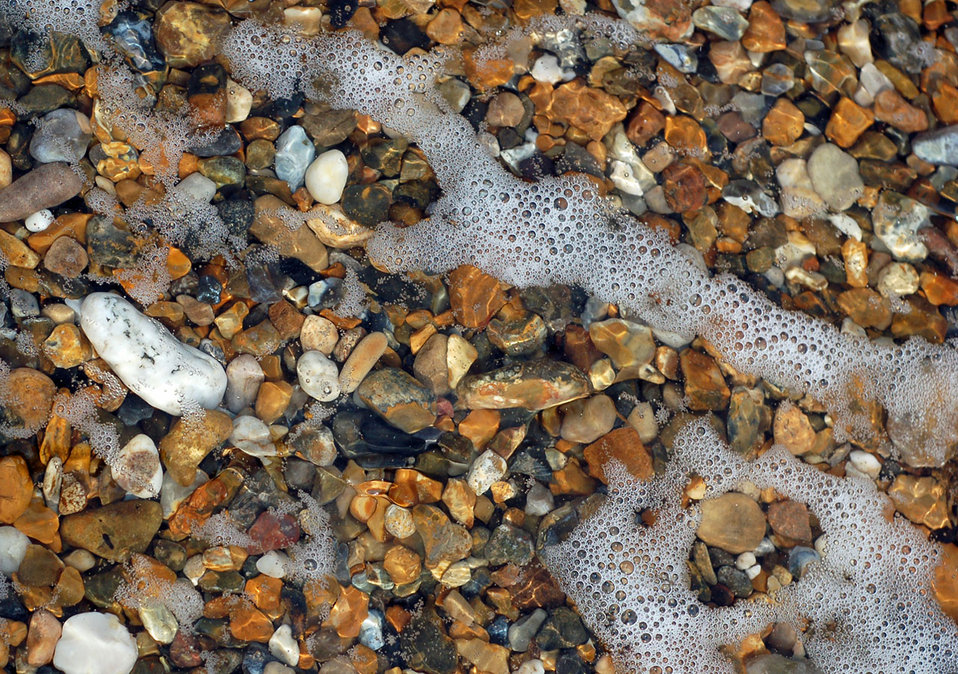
Pebble background

Pebbles under water - background.